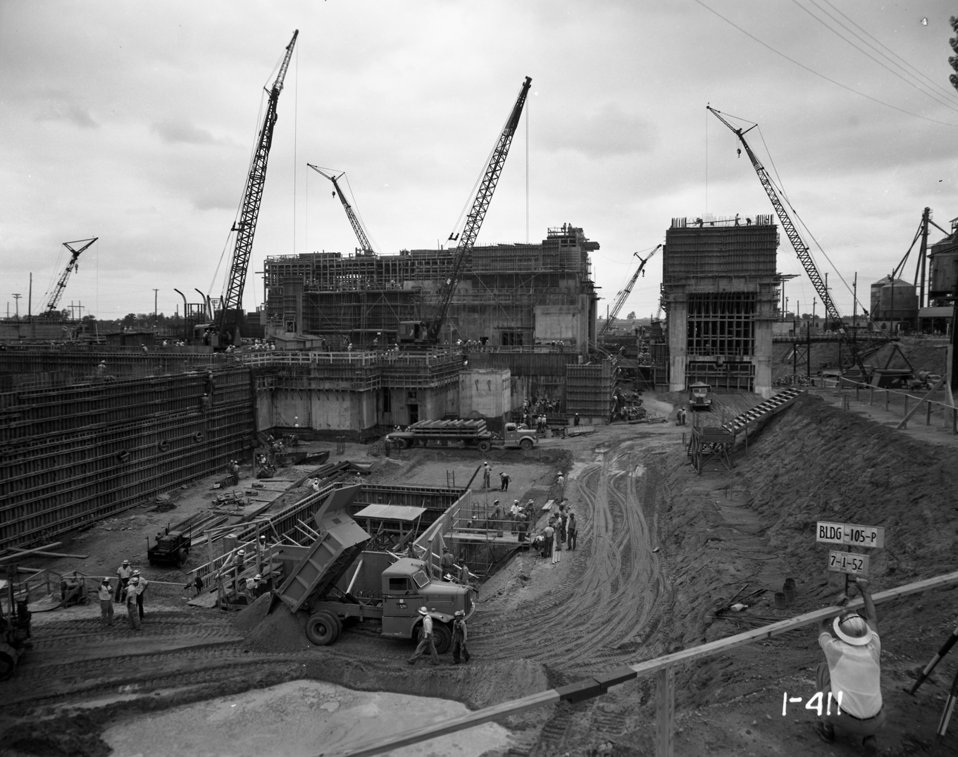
Historic P and R Reactor Photos - Savannah River Site

These photos from the 1950s show the construction of Savannah River Site’s P and R Reactors, as well as activities at the reactors once they became operational that decade. Each of the reactors, which formerly produced nuclear materials, occupies more than 300,000 square feet of space.